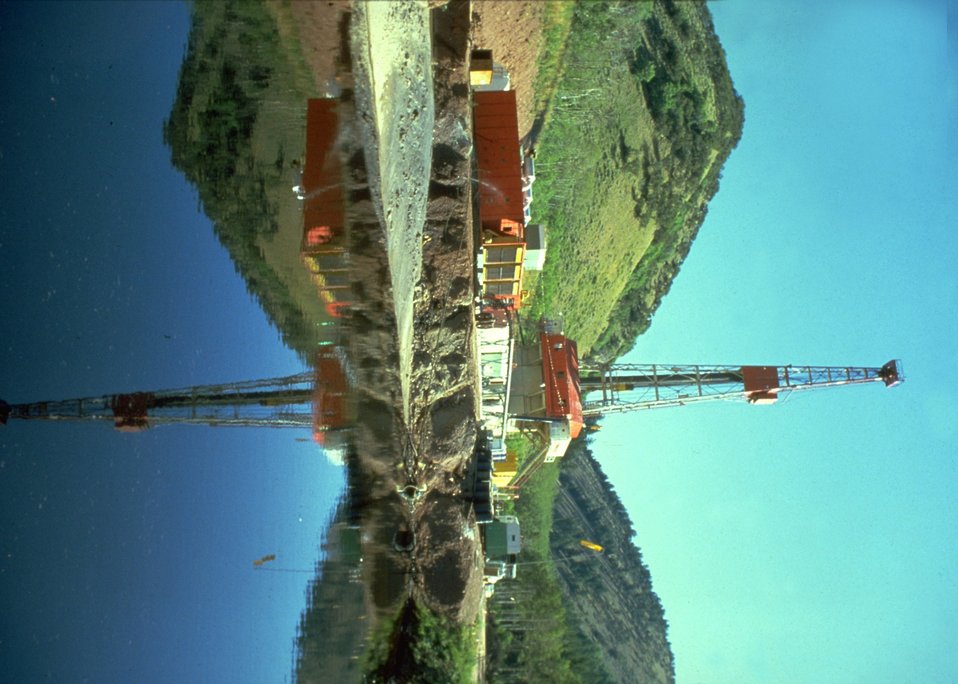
Deep well rig.